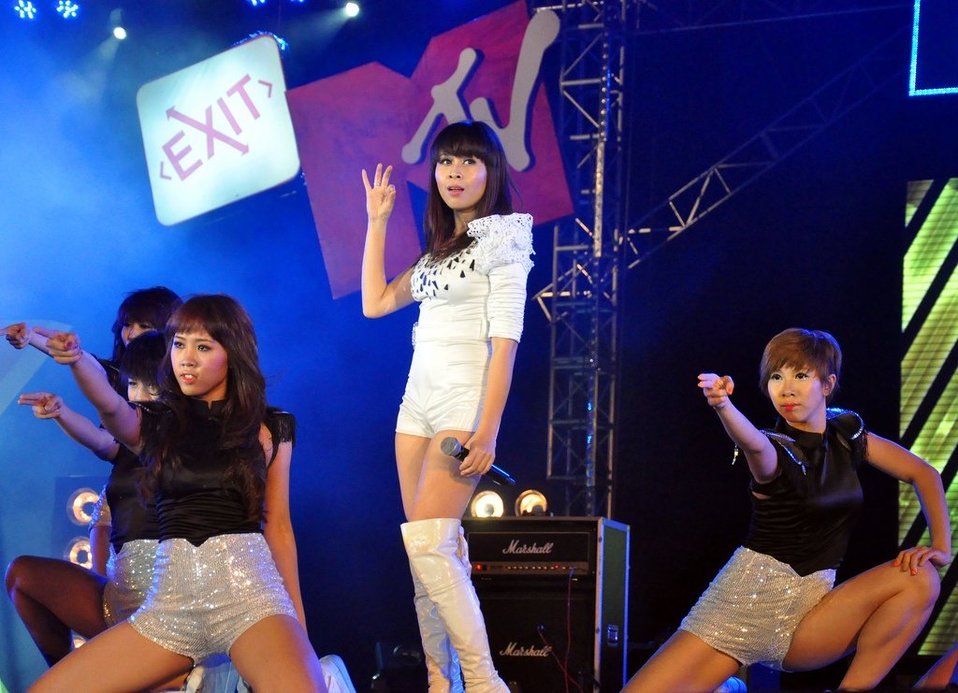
USAID, MTV EXIT concert series in Vietnam, 2010.